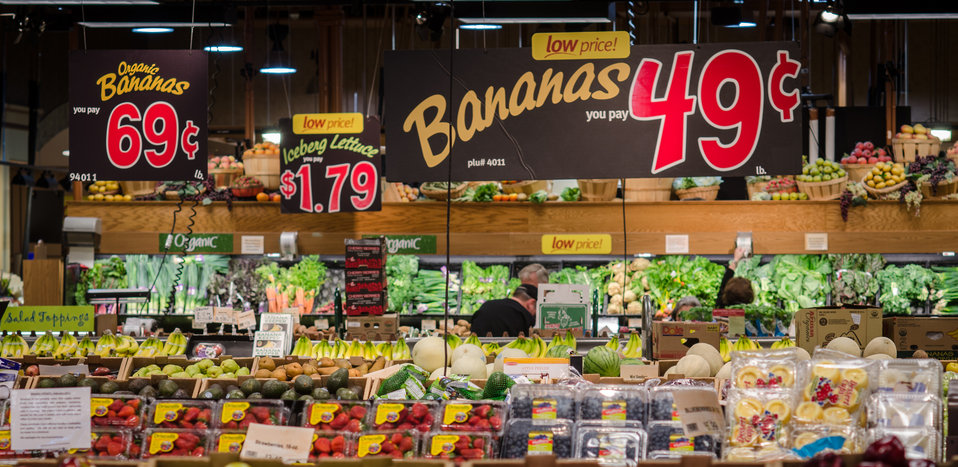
Produce at a grocery store in Fairfax, Virginia, on March 3, 2011.